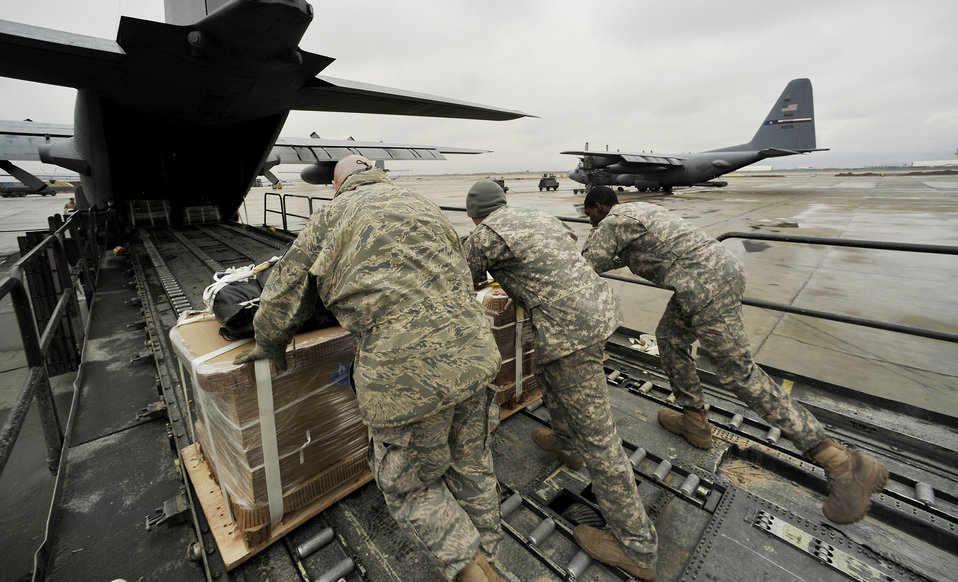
C-130 low-cost, low-altitude combat airdrops now operational

Airmen and two Army Soldiers load a C-130 Hercules with low-cost, low-altitude resupply bundles Feb. 6, 2010, in Afghanistan.